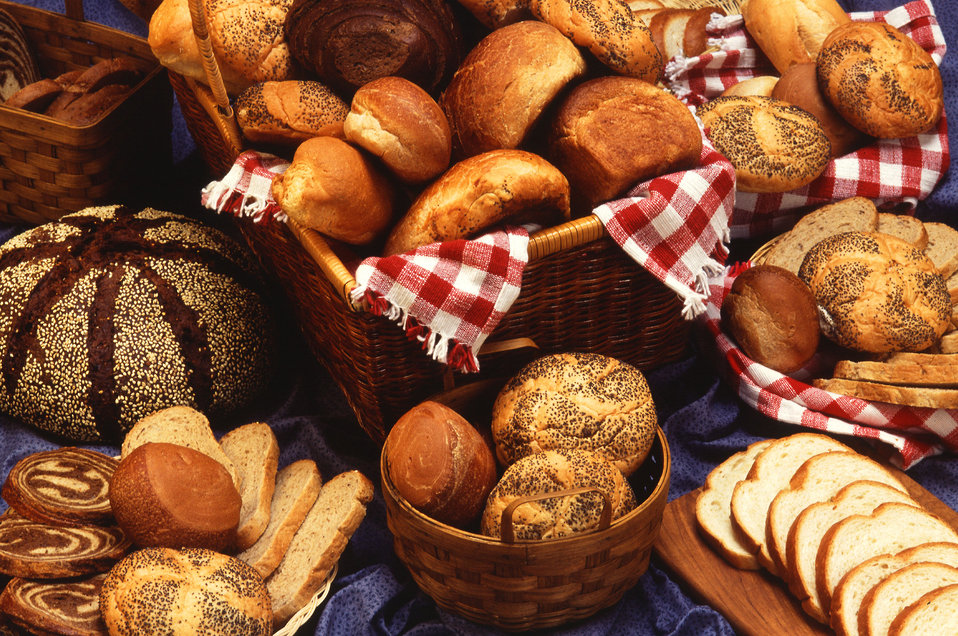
Leavened bread has been around since the days of ancient Egypt, Babylon and Greece. Then, as now, it was made from wheat, or from a mixture of wheat and rye. The elastic gluten in wheat is essential for bread to rise. For 50 years, the U.S. Department of Agriculture (USDA) Agricultural Research Service (ARS) laboratories have worked with all segments of the industry to help provide consumers with uniform, flavorful, nutritious bread and other wheat products. USDA ARS scientists have identified and isolated wheat proteins not previously known to exist and that these proteins-gliadin and glutenin-contain a specific chemical structure that affects mixing properties of flours in forming dough. They discovered the role of fatlike constituents in flour in controlling volume of bread and size of cookies. They found that certain water-soluble proteins called albumins are as essential as gluten in producing a good loaf of bread.